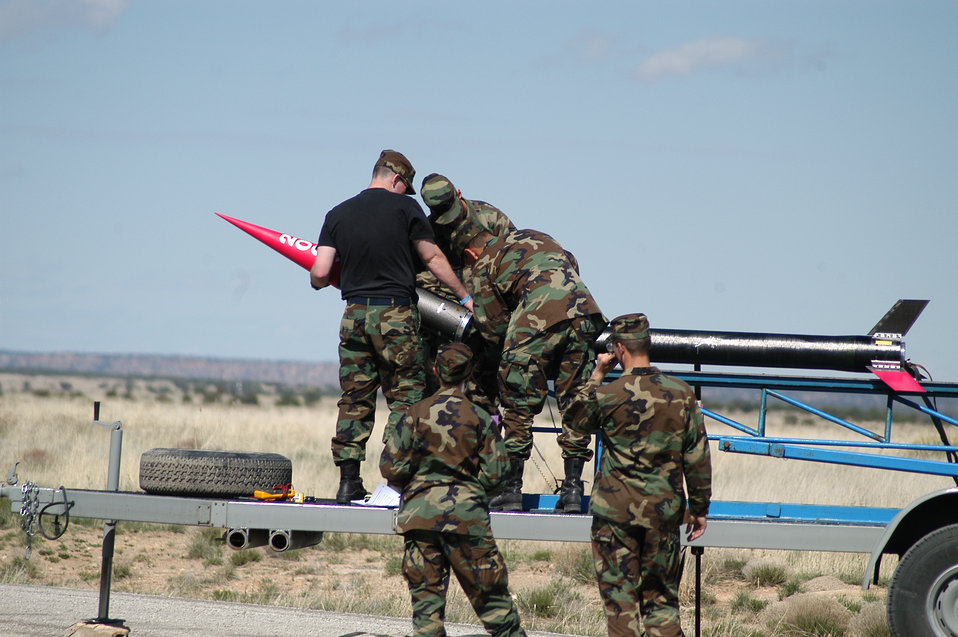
Rocket-powered final exam launches

PINON CANYON MANUEVER RANGE, Colo. -- Cadet launch crews attach the FalconLaunch rocket nose cone and avionics package to the rocket body April 30. During the program, cadets design, manage, build and launch a rocket as part of the Air Force Academy's Department of Astronautics course. The program progresses each academic year, with the eventual goal of creating a rocket which can deliver a 5-pound scientific or experimental payload to an altitude of about 60 miles.